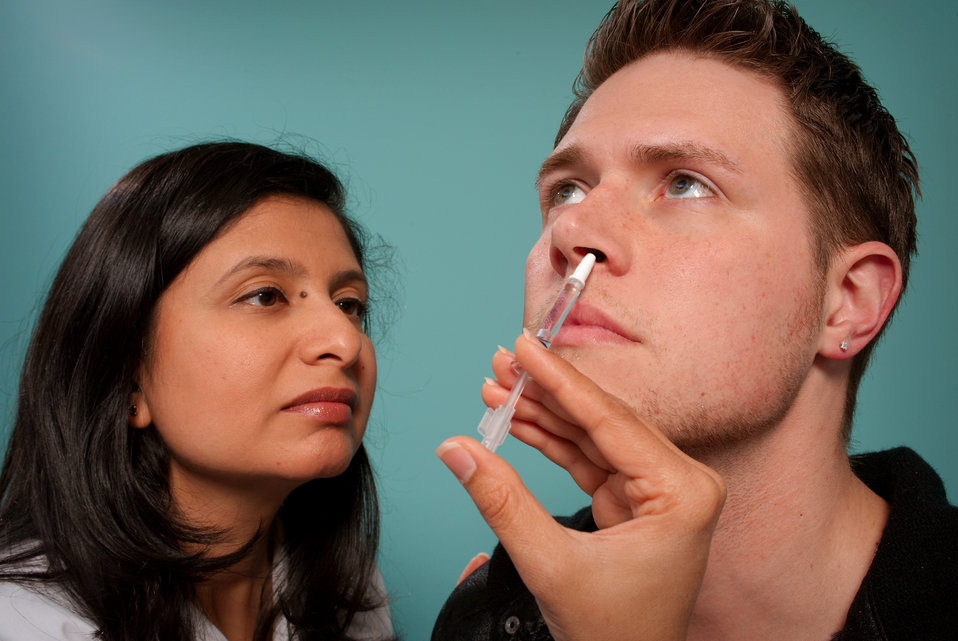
This 2009 image depicts a healthcare practitioner as she was administering the H1N1 live attenuated intranasal vaccine (LAIV) to a male recipient. Using a small syringe, she was delivering the vaccine mist into the man's left nostril.